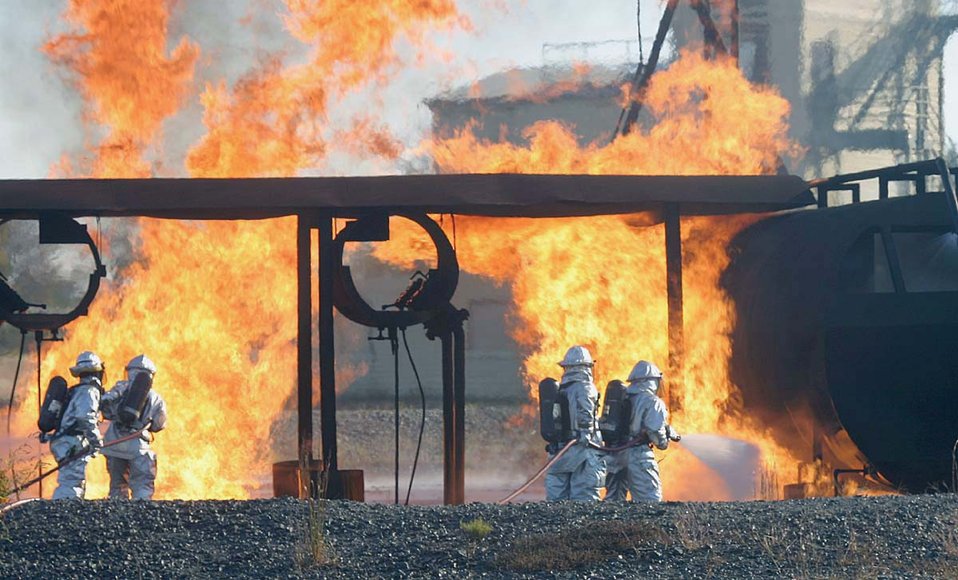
Fighting fire

LITTLE ROCK AIR FORCE BASE, Ark. -- Firefighters from the 314th Civil Engineer Squadron extinguish the flames on a replica of a C-130 Hercules during a recent exercise. Scenarios tested the real-world preparedness of civilians and airmen as well as honed their training and response time.